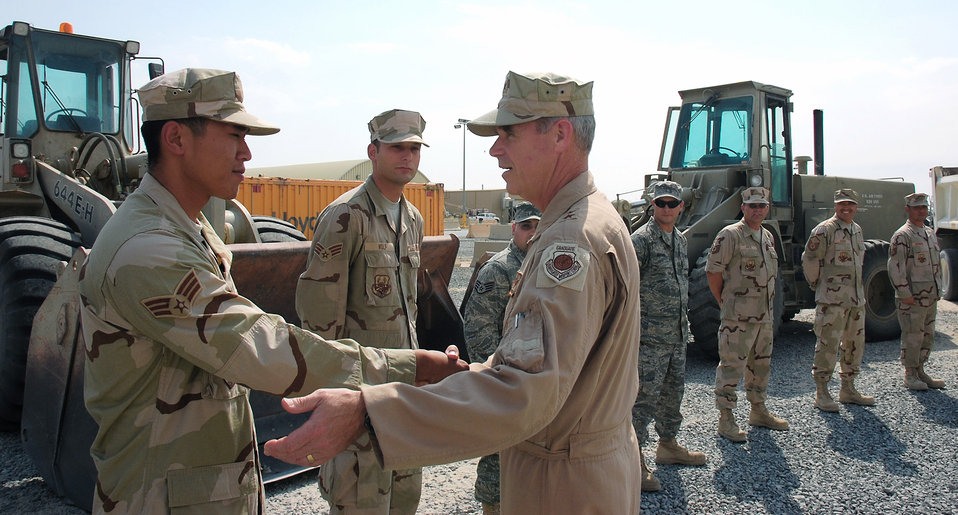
CENTAF vice commander: Airmen performing wonderfully

Senior Airman Khanh Le meets Maj. Gen. William L. Holland Sept. 30 in Southwest Asia. General Holland is the vice commander of 9th Air Force and the deputy commander of U.S. Central Command Air Forces. Airman Le, a 386th Expeditionary Civil Engineering Squadron pavement equipment operator, is deployed from Hickam Air Force Base, Hawaii.